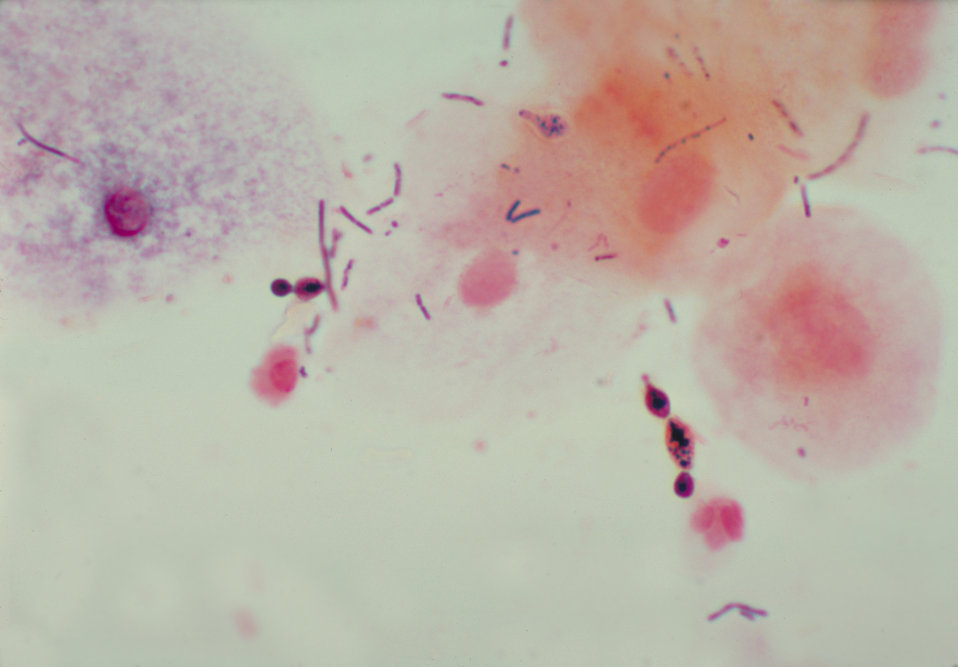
This is a photomicrograph of a vaginal smear identifying Candida albicans using gram-stain technique.